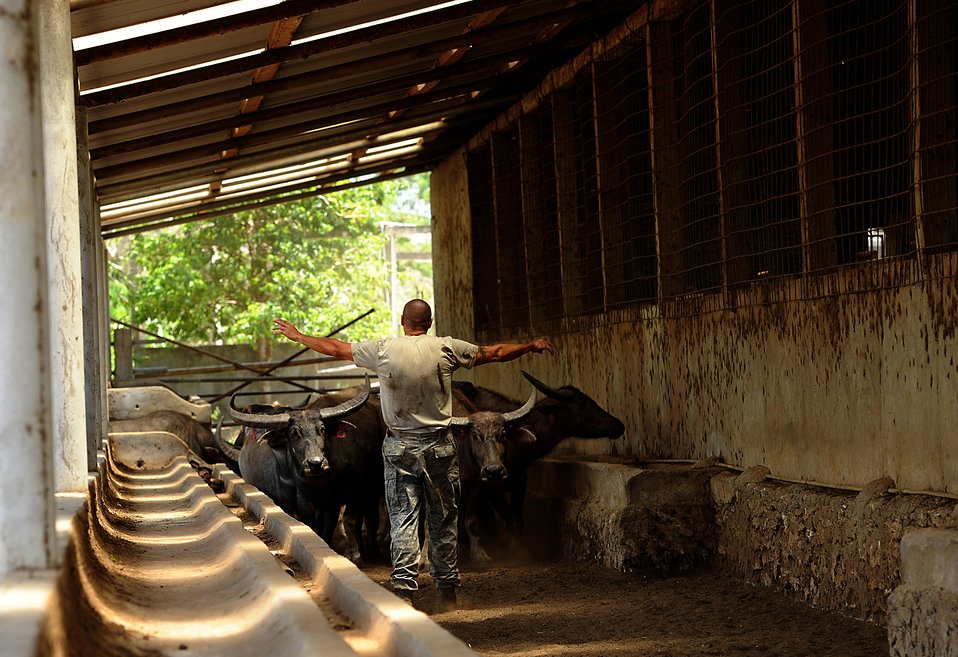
Like herding cattle

Maj. Douglas Riley tries to corral water buffalo into a pen for examination Sept. 22, 2011, in Fuiloro, Timor-Leste during Pacific Angel 11-02. Riley is a 13th Air Force international health veterinarian at Joint Base Pearl Harbor-Hickam, Hawaii.